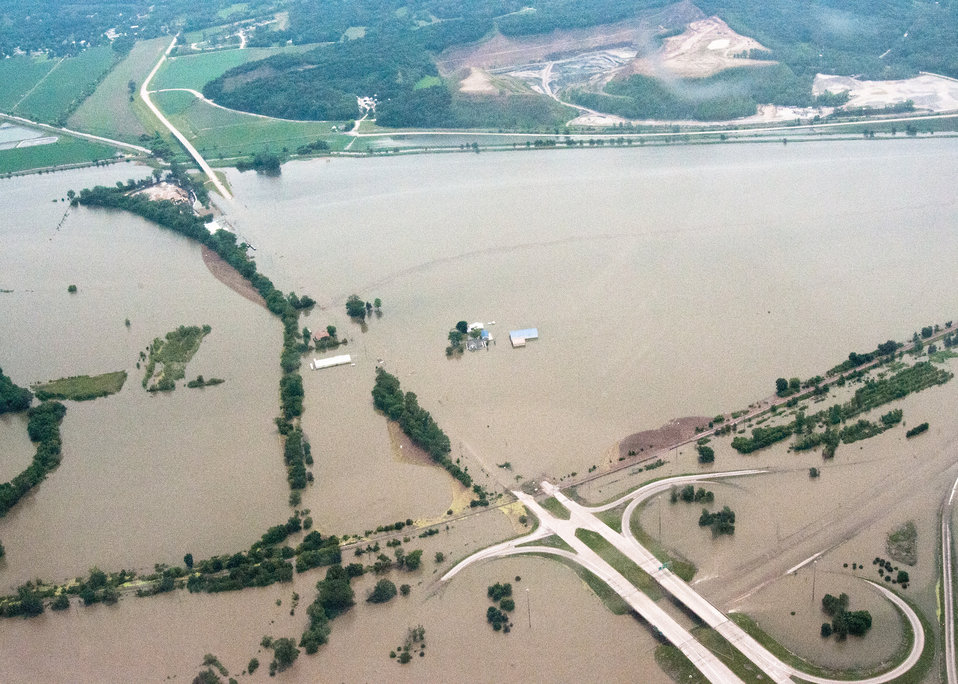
The Missouri river flooded hundreds of acres in Nebraska and Iowa. Agriculture Secretary Tom Vilsack visited the area on Friday, June 17, 2011, and spoke to agriculture producers and community leaders. The goal of the meetings was to get a firsthand look and provide that information back to Washington necessary to better deliver disaster programs expeditiously to effectively respond to this disaster. The United States Department of Agriculture agencies have programs to assist producers as they assess recovery efforts to assist with recovery in rural areas reeling from a natural disaster. USDA and the entire federal family have been working with state and local officials to provide relief to residents, farmers, ranchers and businesses.